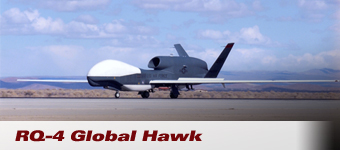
RQ-4 Global Hawk